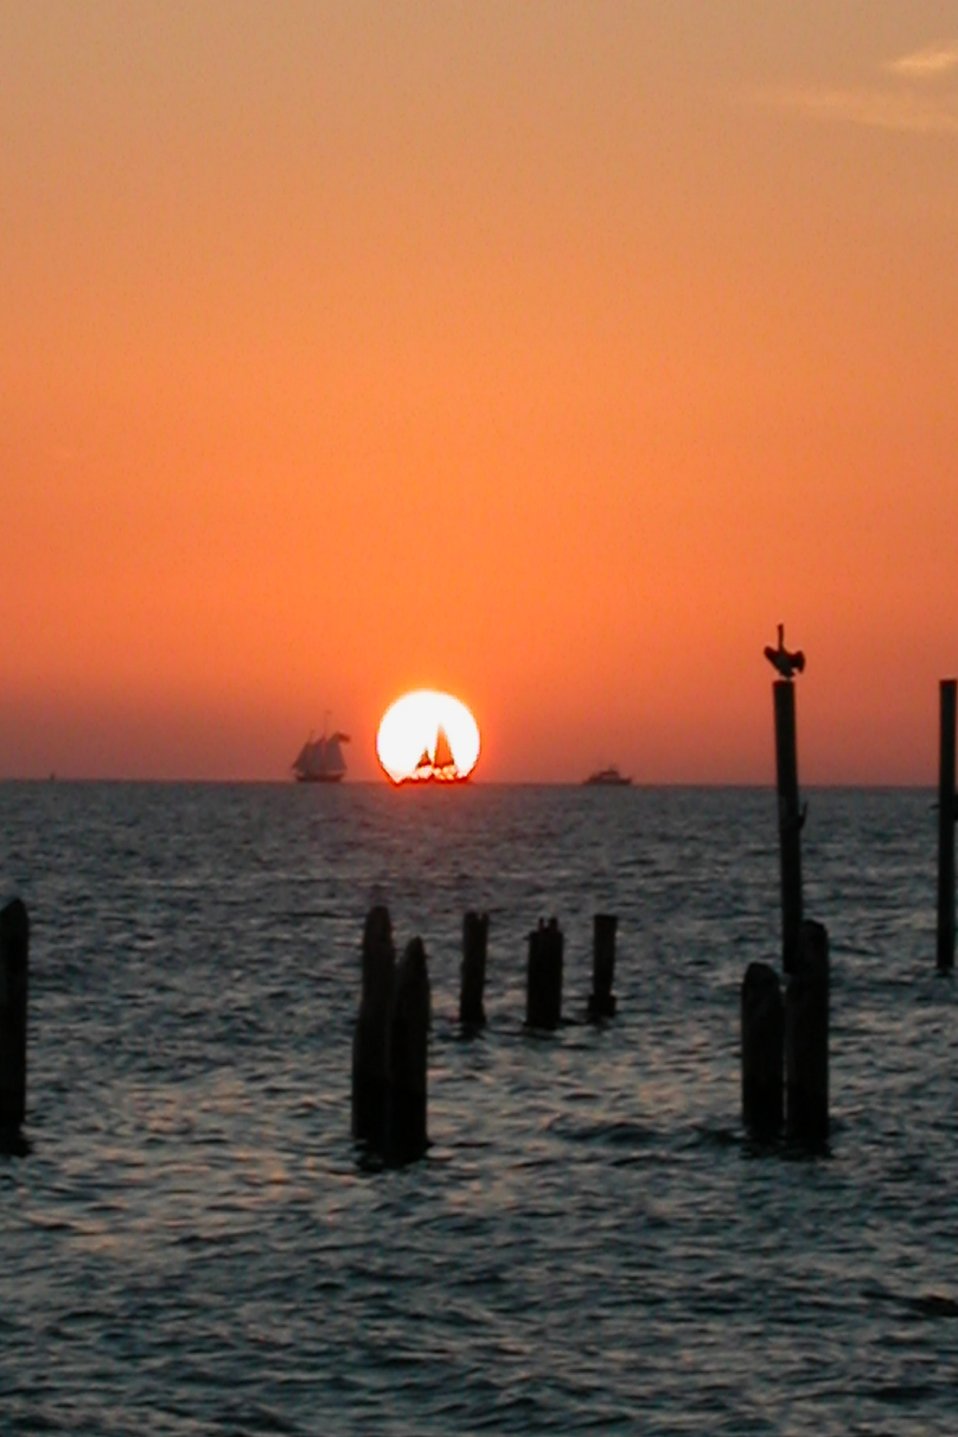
Red sails in the sunset #1.